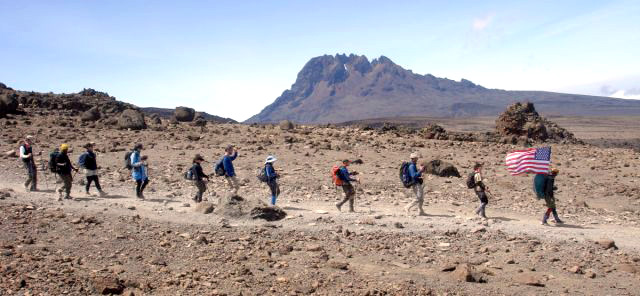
Team conquers mountain summit on quest

The team descends the summit of Mount Kilimanjaro July 16 as they follow their lead guide, Emmanuel, who carries the American flag. Assisting the Seven Summits Challenge team on the climb were two guides, four assistant guides, two cooks, three servers and 30 porters.